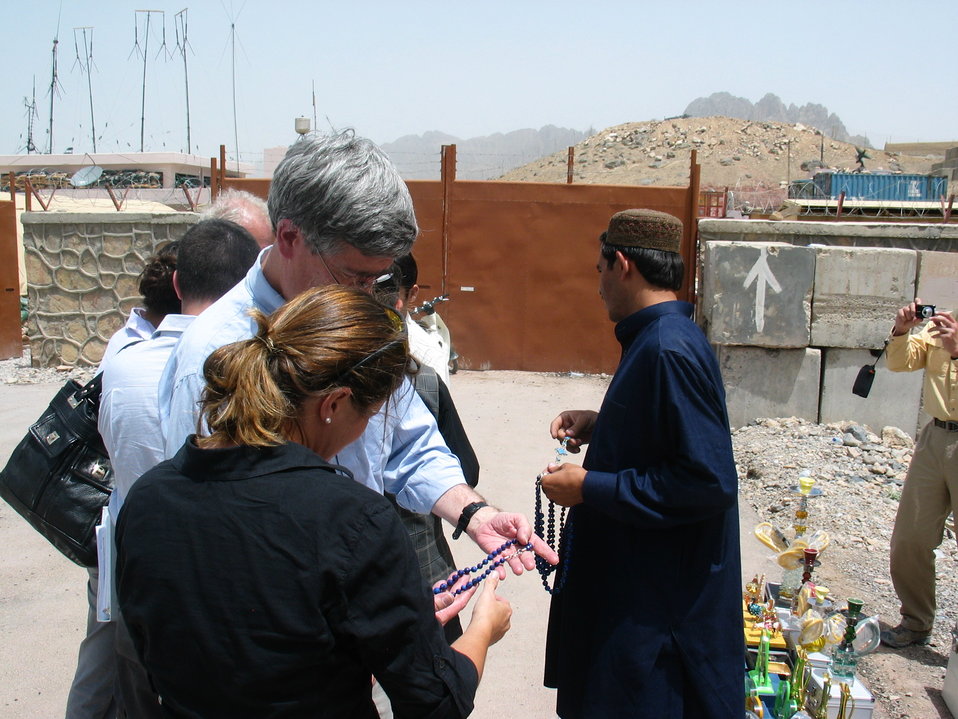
CODEL Berman